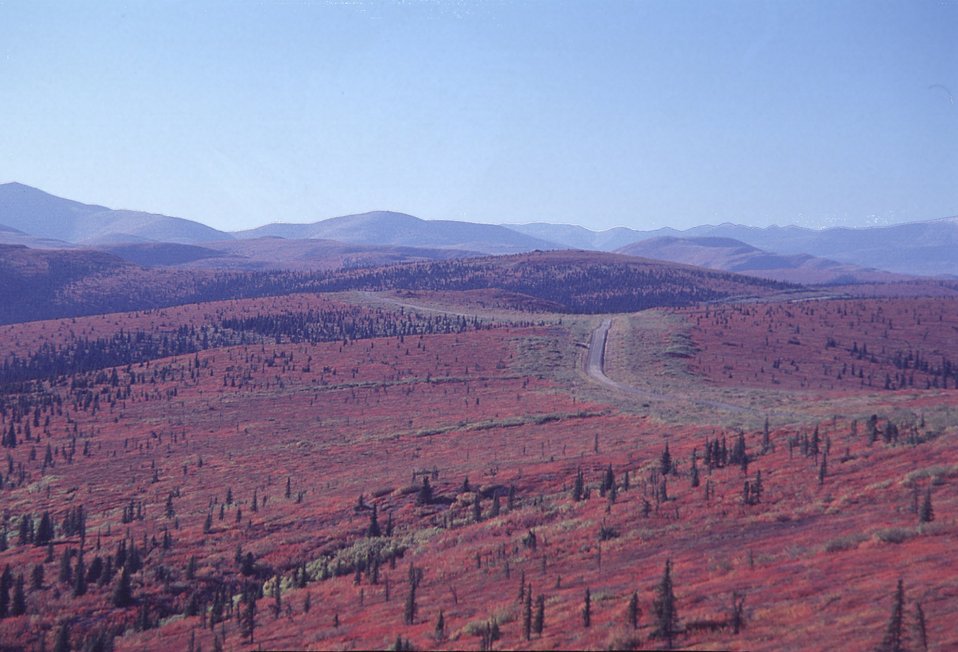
Fall tundra colors along Taylor Highway, Alaska